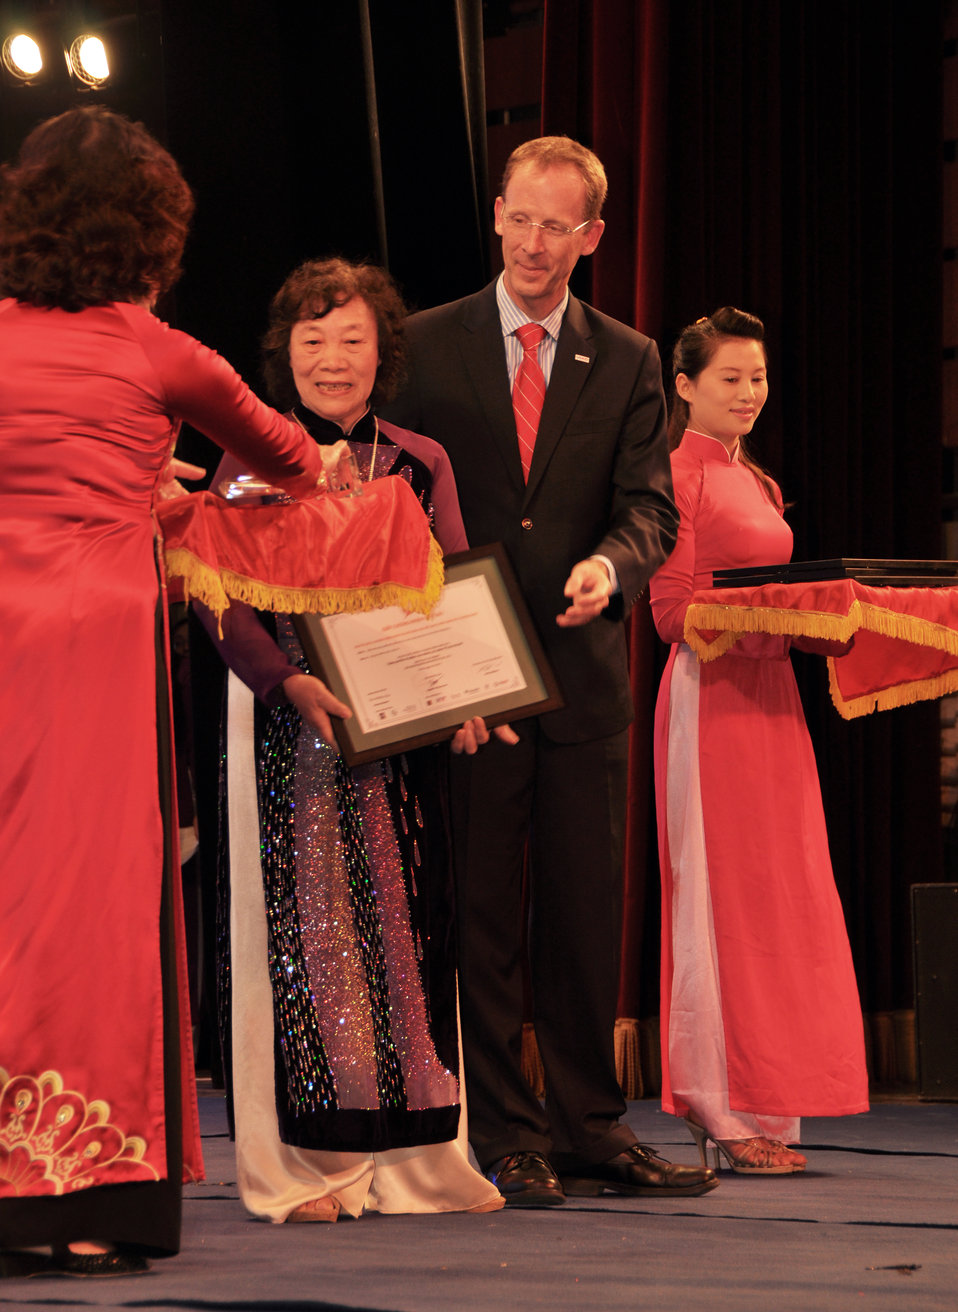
Vietnam Women Innovation Day 2013

USAID Mission Director Joakim Parker awards prizes to winning innovative proposals.

Hanoi, October 2, 2013.